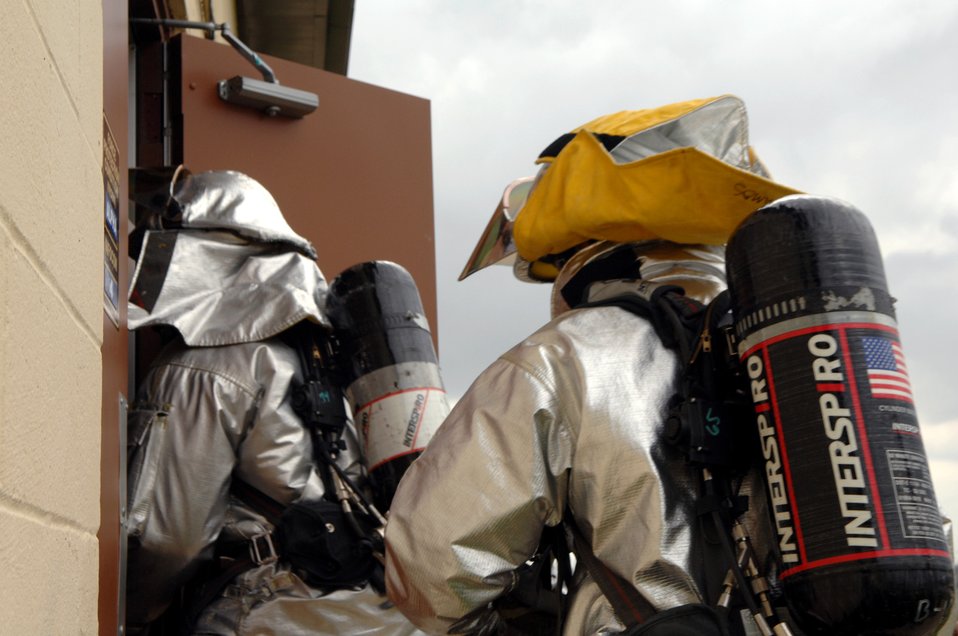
Global Cajun 07-2

Staff Sergeant Roderick Wiggins (left) and Airman Michael Ramos rush to put out a mock electrical fire as part of a Conventional Operational Readiness Exercise March 12 at Barksdale Air Force Base, La. The Airmen are working in support of Global Cajun 07-2.